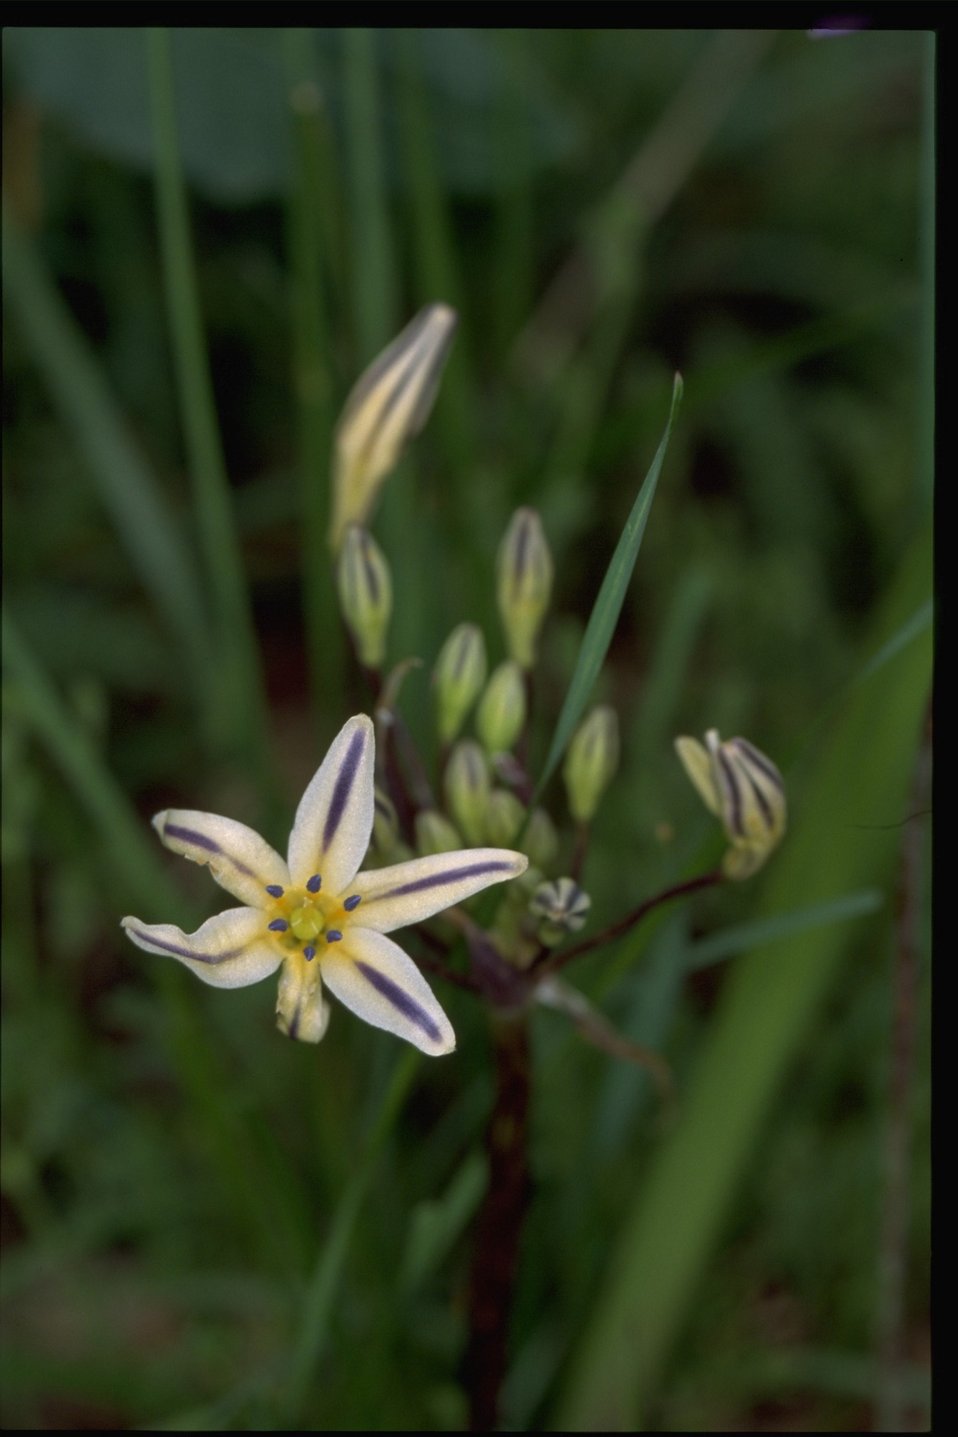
Medium shot of Brodiaea leachiae peck.